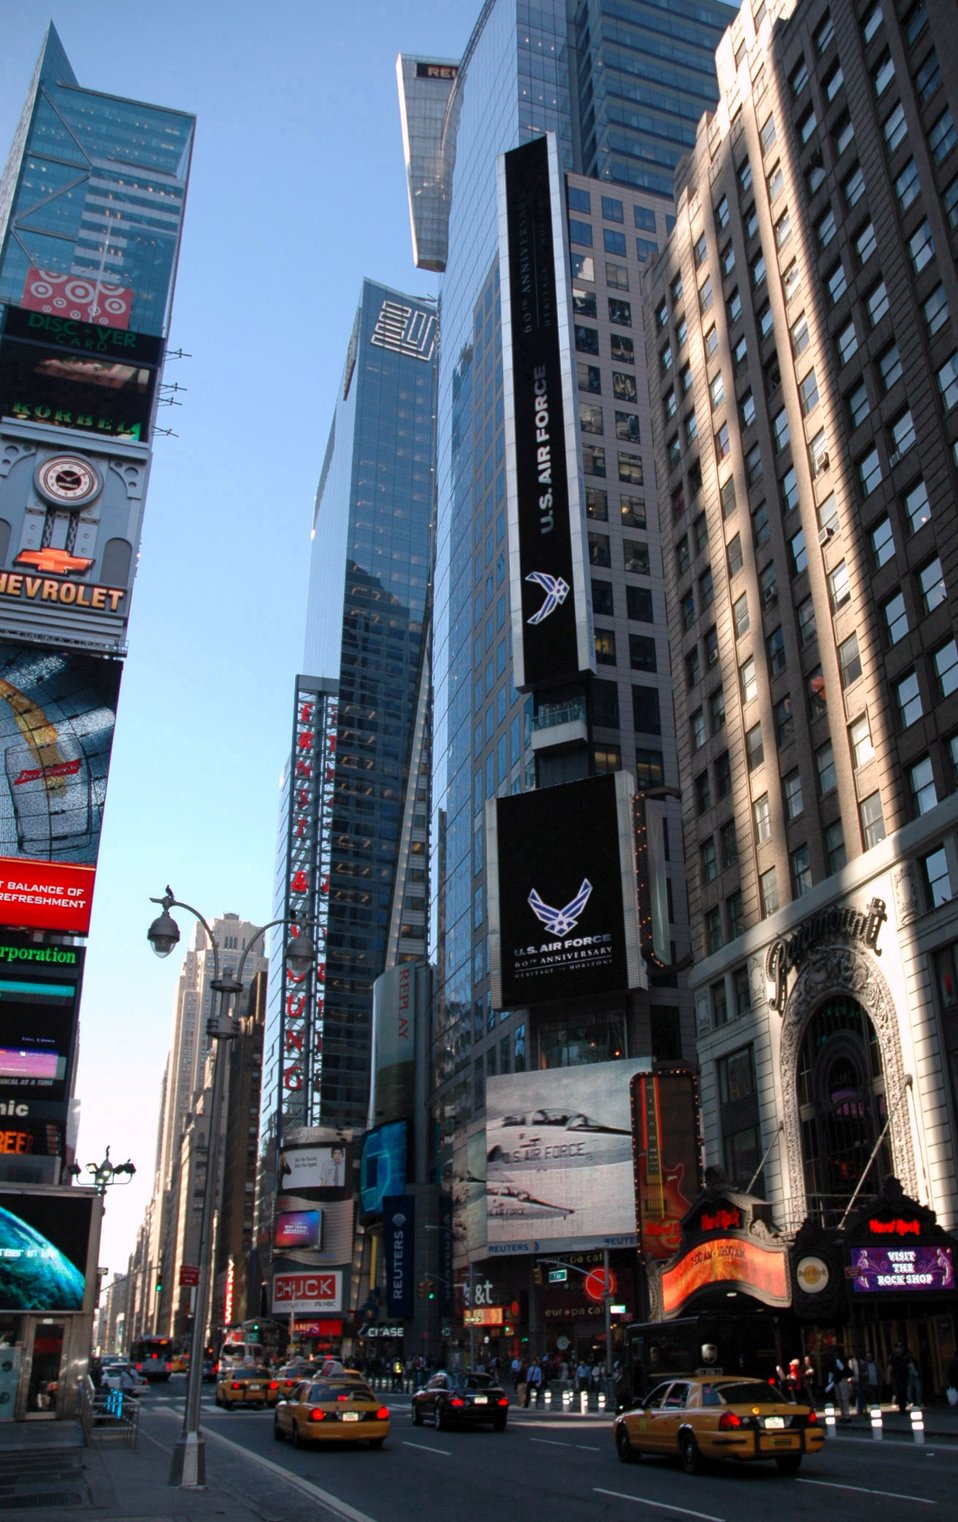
New York City salutes Air Force's birthday

New York City offers the Air Force a 60th birthday salute in Times Square Sept. 18, courtesy of the Nasdaq stock market and Reuters news service. The companies displayed the Air Force graphics throughout the day to mark the occasion.